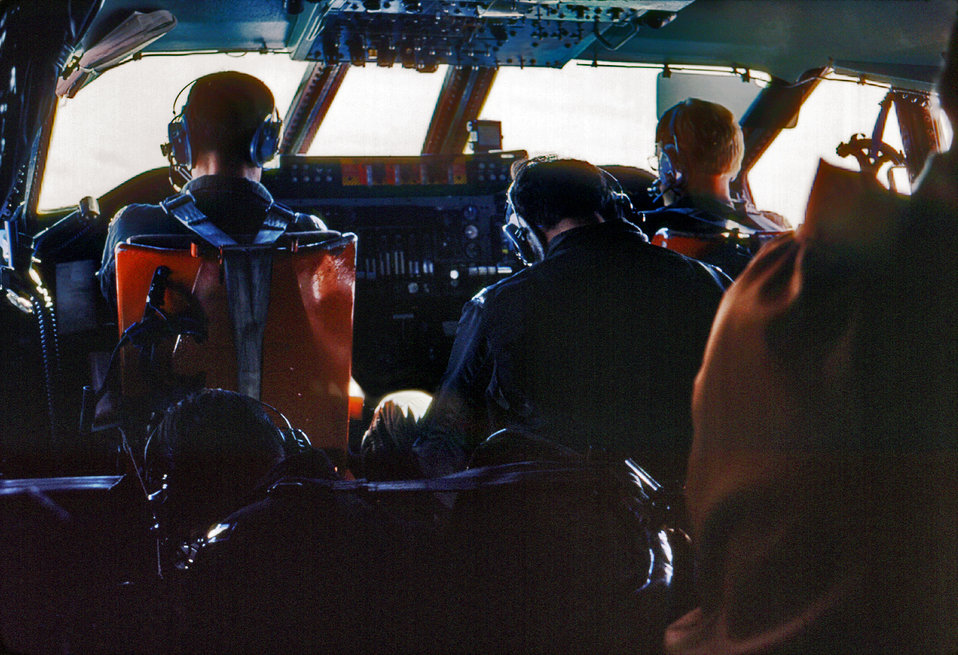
These were pilots within the aircraft cabin of a C-141 jet, which was in route to Atlanta, GA while transporting a mobile quarantine facility (MQF), i.e., see PHIL ID# 7234.